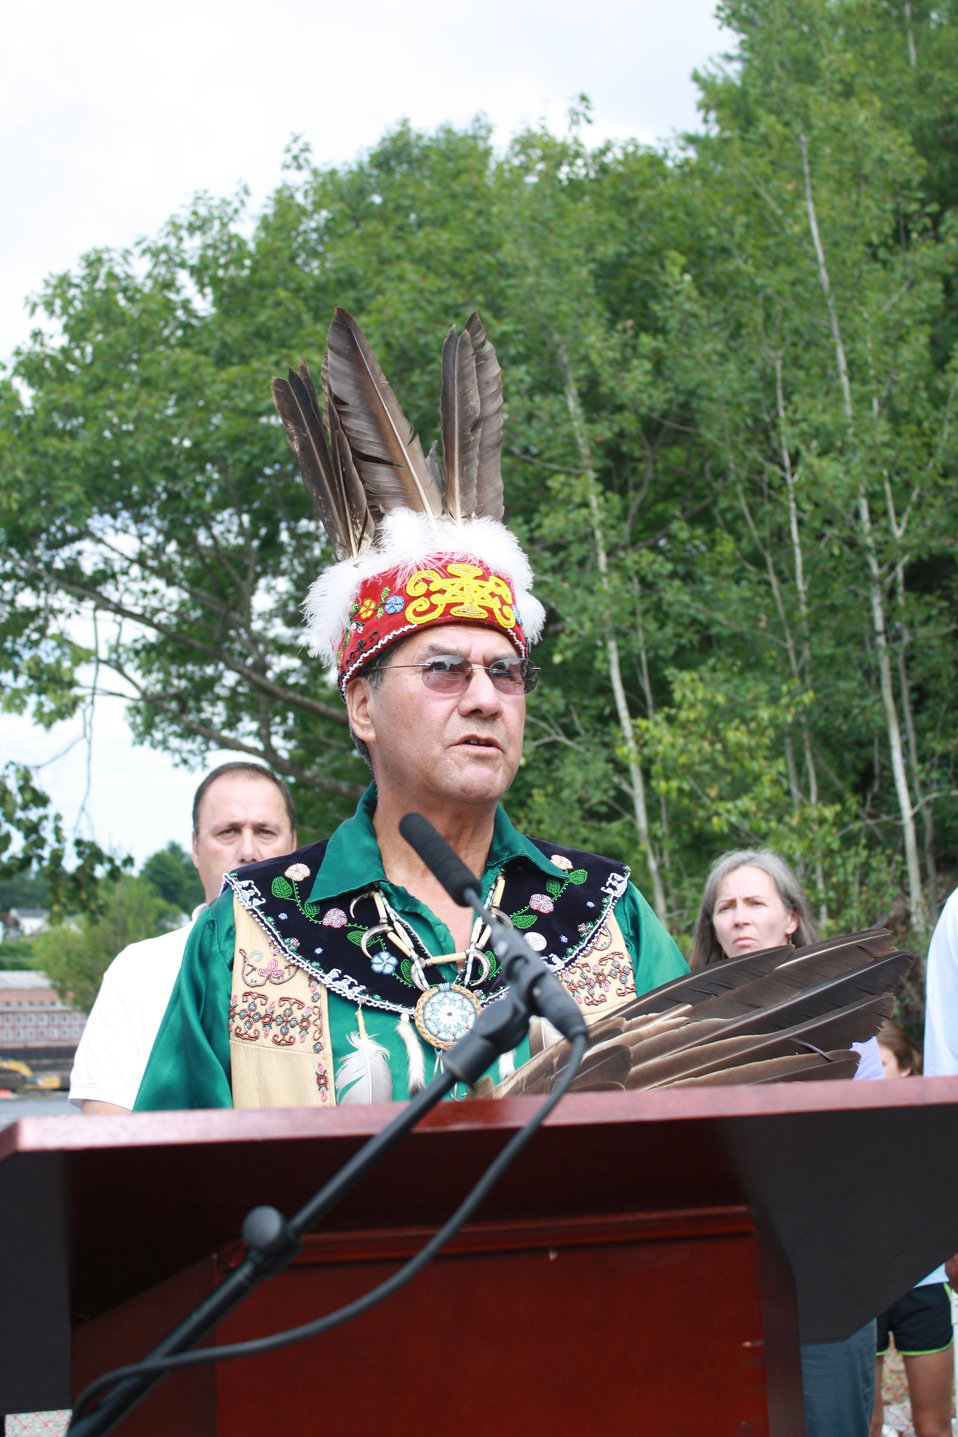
Veazie Dam Removal

Penobscot Indian Nation Elder Butch Phillips.